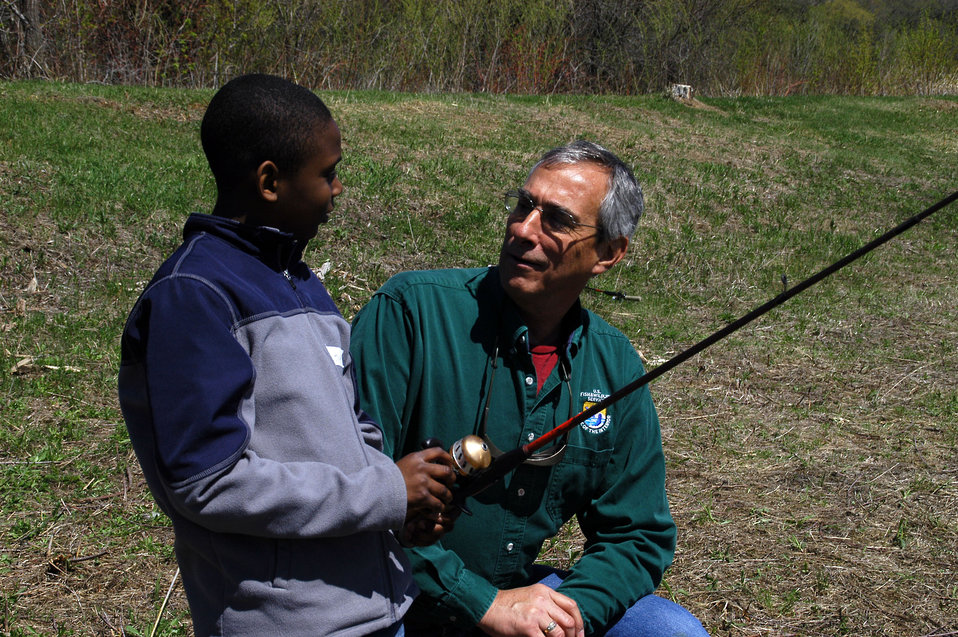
Regional Director Tom Melius shares fishing wisdom with student while at the Bass Ponds.